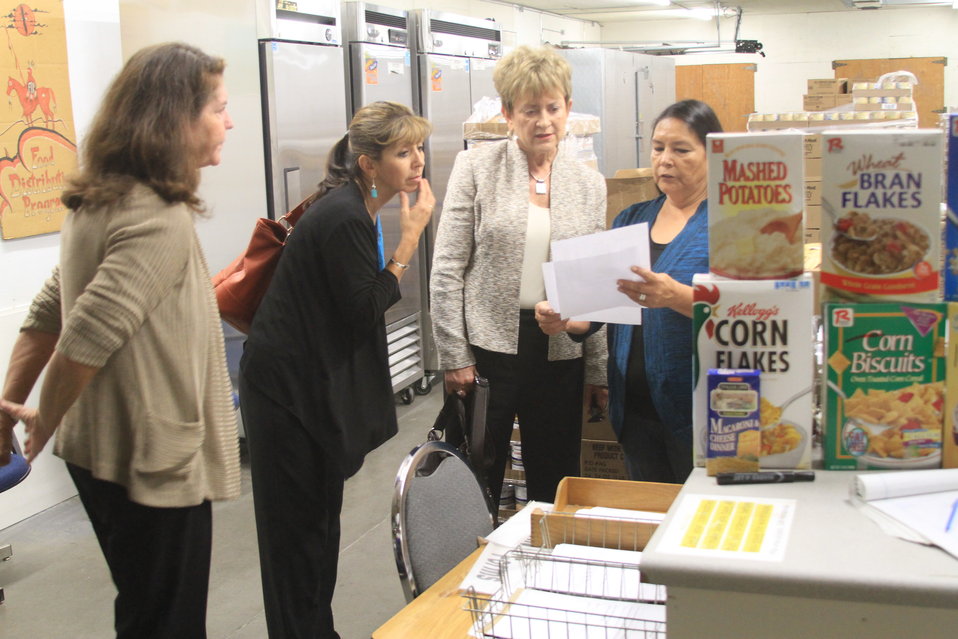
Theresa Lofton (right), explains the process of providing food to approximately 406 families once a month on or near the Cheyenne River Reservation to (l to r), Darlene Barnes, Mountain Plain Regional Administrator, USDA’s Food and Nutrition (FNS), Service, Darlene Sanchez, Regional Division Director at FNS and U.S Department of Agriculture Deputy Under Secretary, FNS, Janey Thornton on the Cheyenne River Indian Reservation, SD, on Tuesday, Sept. 24, 2013.